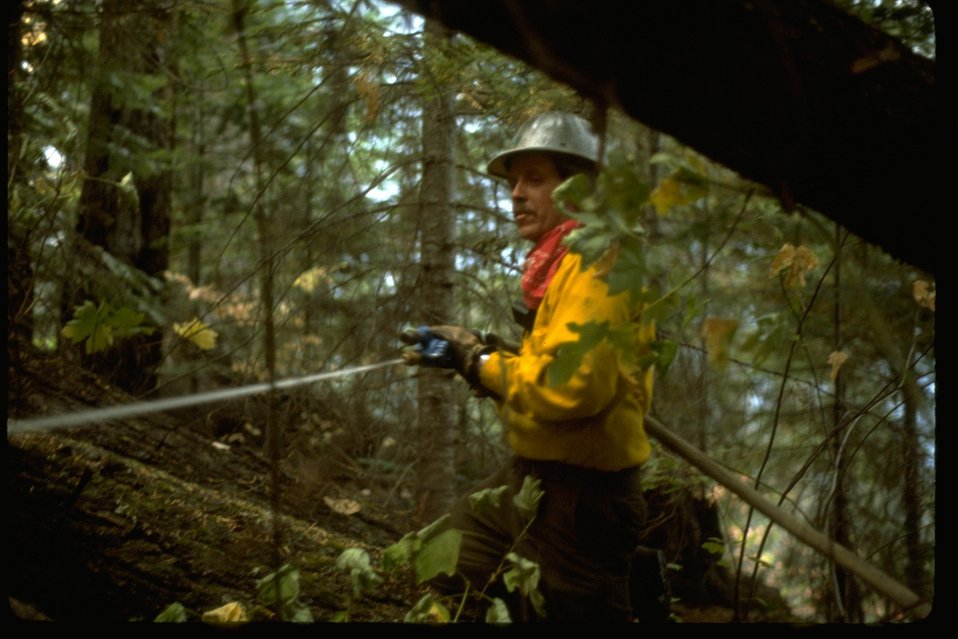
Firefighter is hosing down the fire.